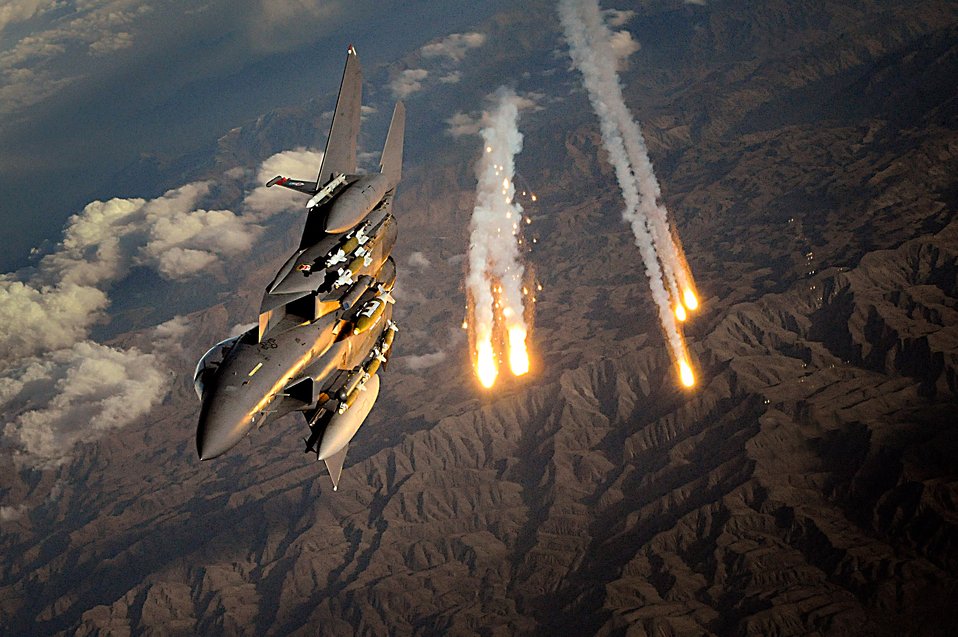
April 5 airpower summary: F-15Es deter enemy

An F-15E Strike Eagle deploys countermeasure flares over Afghanistan. An array of avionics and electronics systems gives the F-15E the capability to fight at low altitude, day or night, and in all weather.